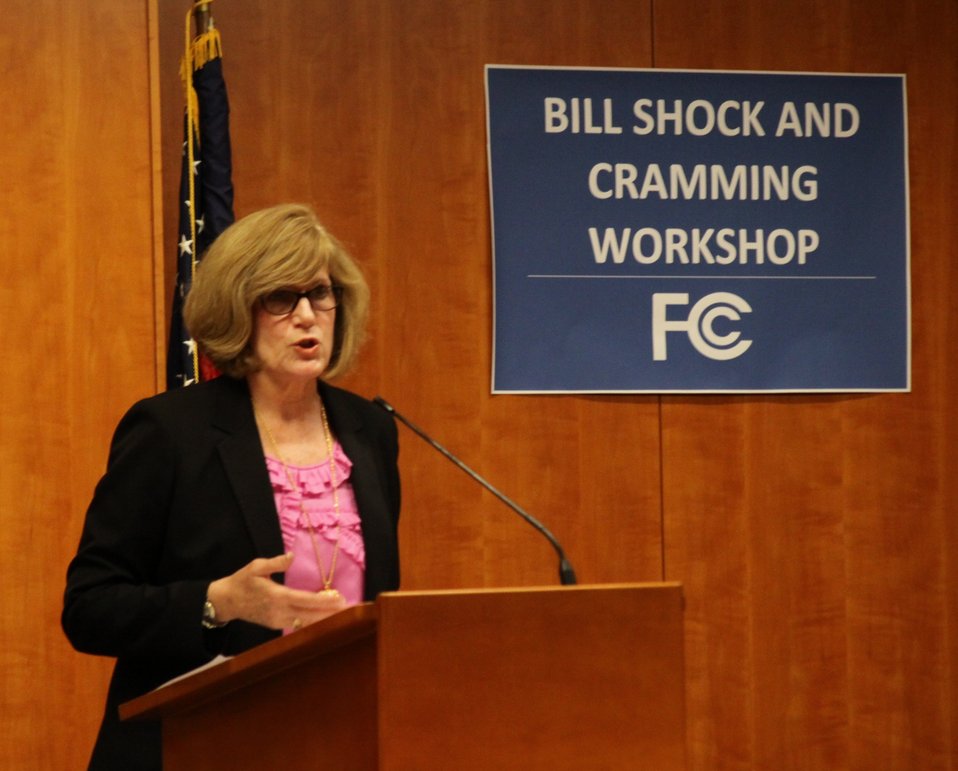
April 17, 2013 Bill Shock and Cramming Workshop - Kris Monteith, Acting Chief, Consumer and Governmental Affairs Bureau